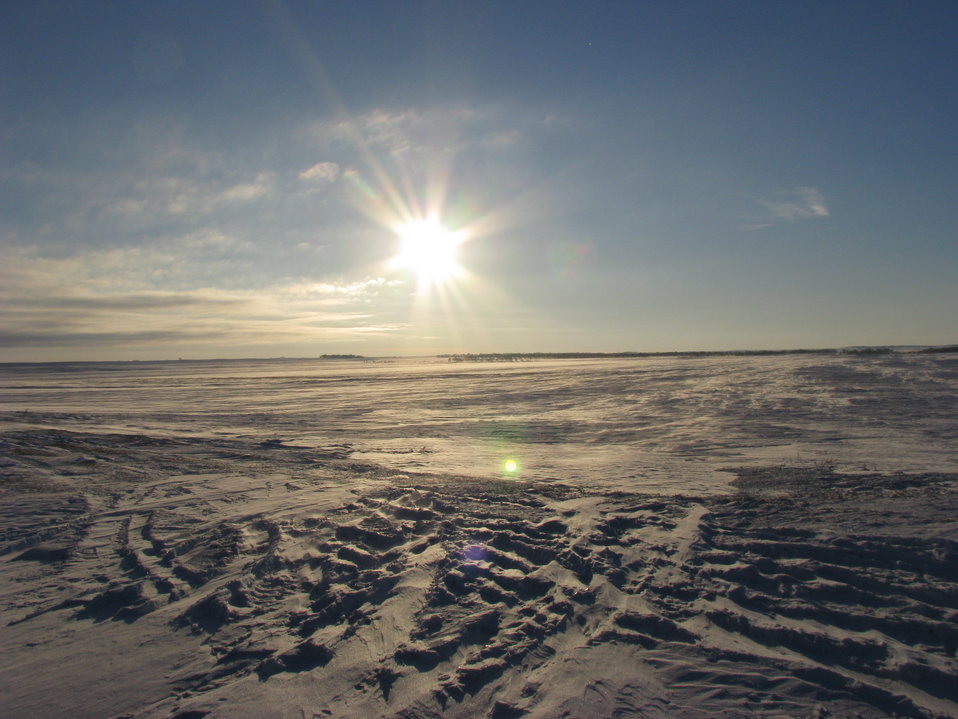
North Dakota Winter

This winter landscape was taken at Wolf WPA on a January morning.